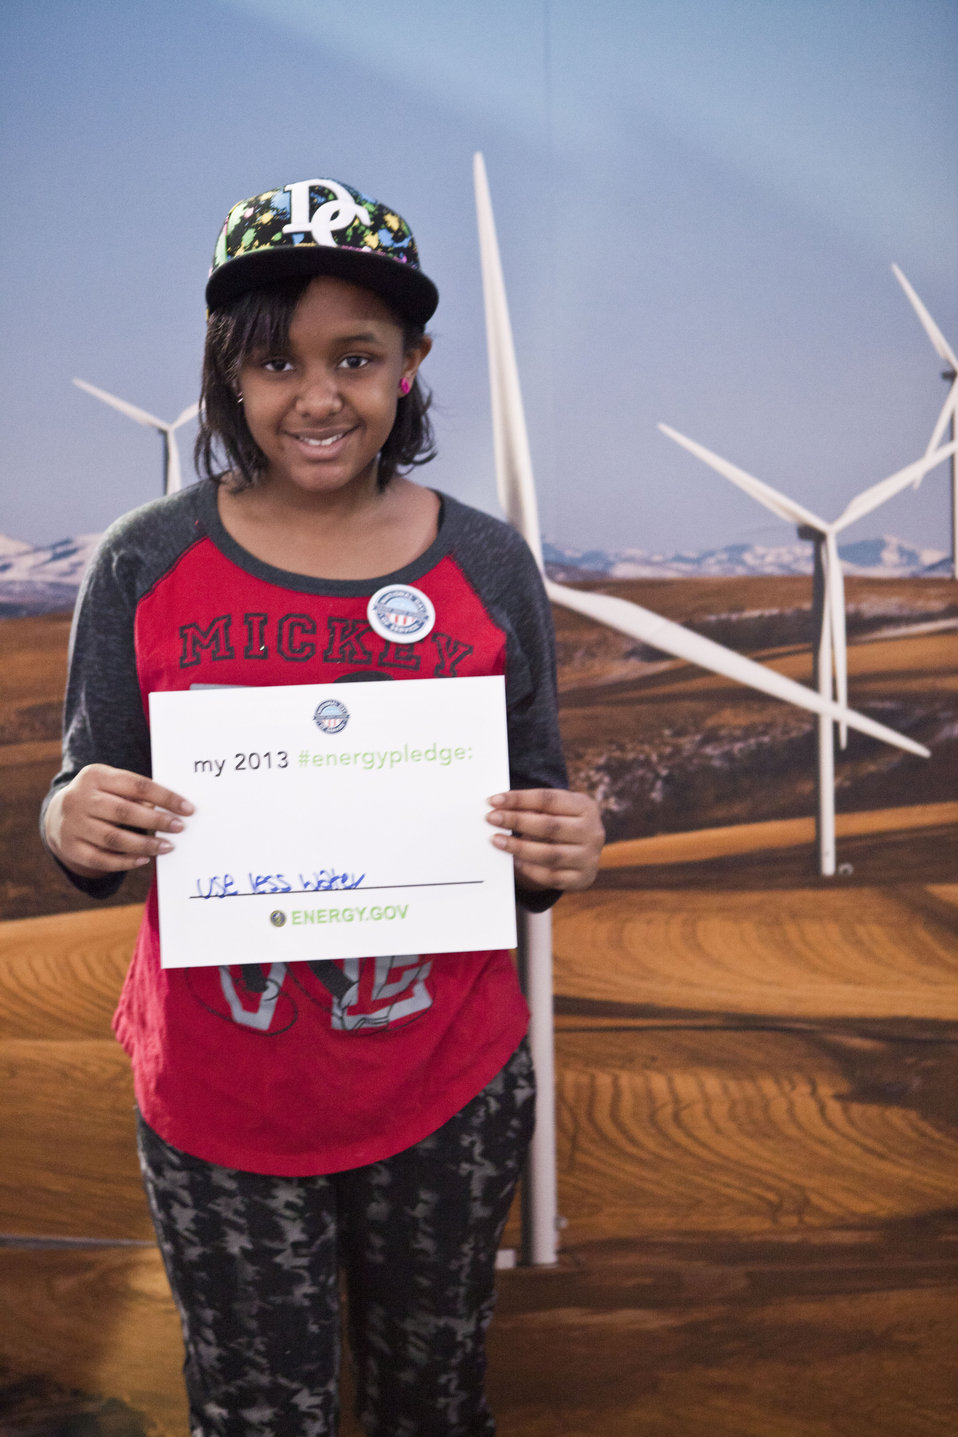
What's your #energypledge?